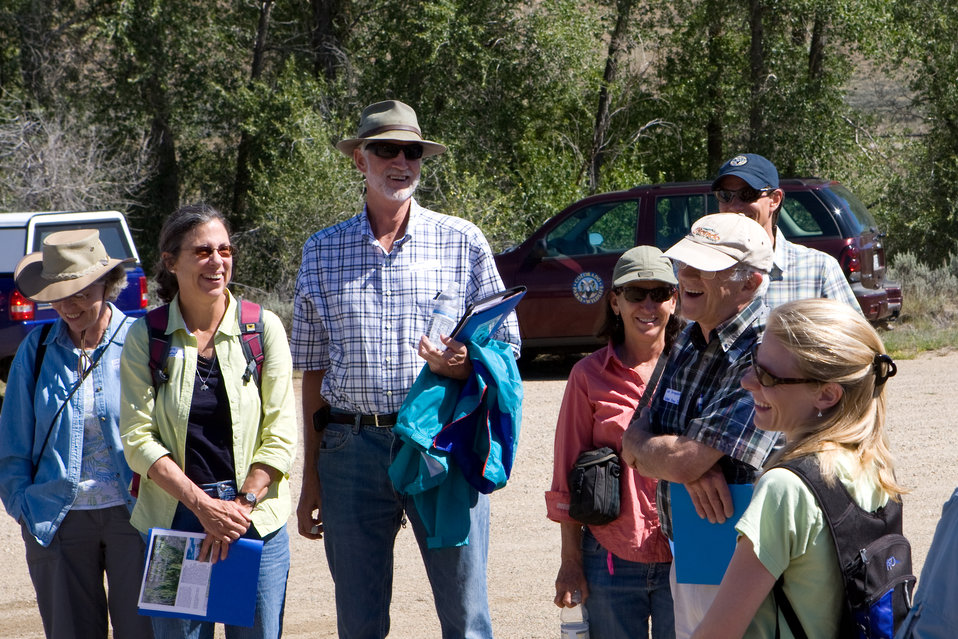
Colorado Rare Plant Conservation Initiative

The Colorado Rare Plant Conservation Initiative (RPCI) is a partnership of 23 statewide and regional agencies, private organizations, and academic institutions working to conserve 121 rare plants in Colorado. As part of these efforts the group developed the Colorado Rare Plant Conservation Strategy, developed Best Management Practices to reduce energy development impacts, addressed climate change, and developed focused strategies for the conservation of individual species at eight priority landscapes. The group has also worked to coordinate volunteer efforts for plant conservation across the state.